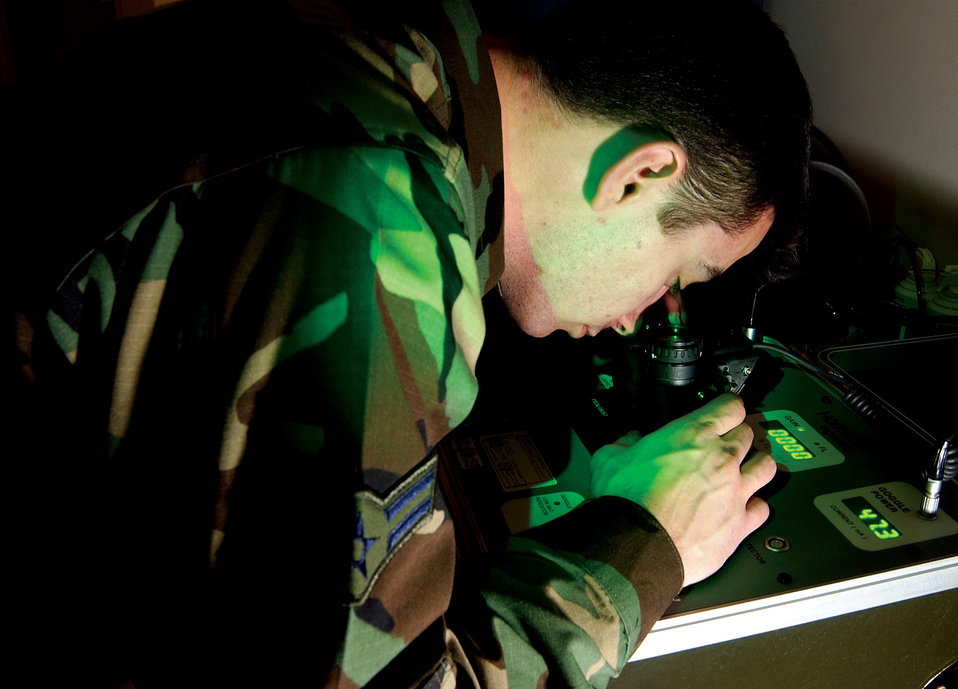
NVG inspection

MCCHORD AIR FORCE BASE, Wash. -- Airman 1st Class Steve Taylor inspects a pair of night-vision goggles for spot defects and clarity here recently. Airman Taylor is an aircrew life support technician assigned to the 62nd Operation Support Squadron.